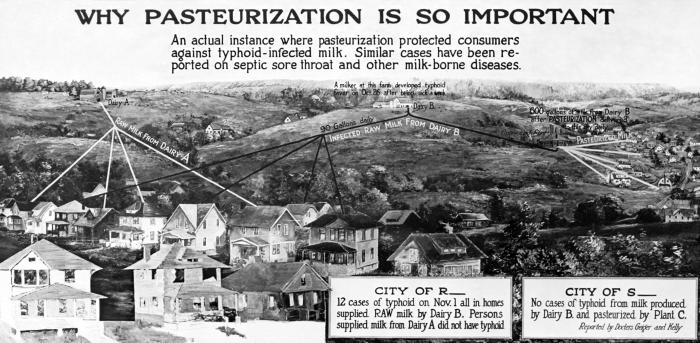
The importance of milk pasteurization was the point of this historic 1926 message from the Minnesota Department of Health. The drawing illustrated 'an actual instance where pasteurization protected consumers against typhoid-infected milk.' A comparison was made between City R , which reported 12 cases of typhoid, to City S , which reported no cases of typhoid fever, due to the pasteurization process implemented prior to distribution of milk to the City S townsfolk.